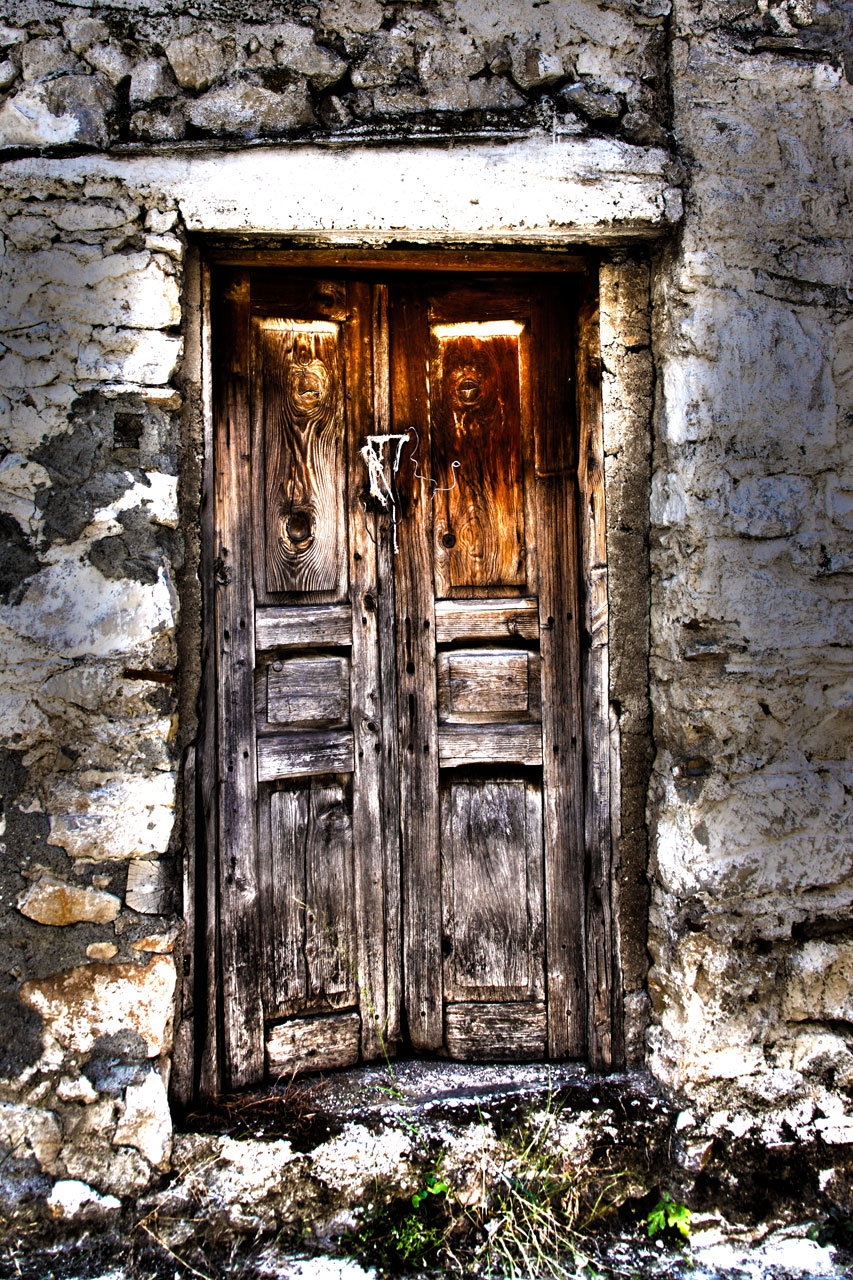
Old wooden door

Very old wooden door in hdr (high dynamic range).